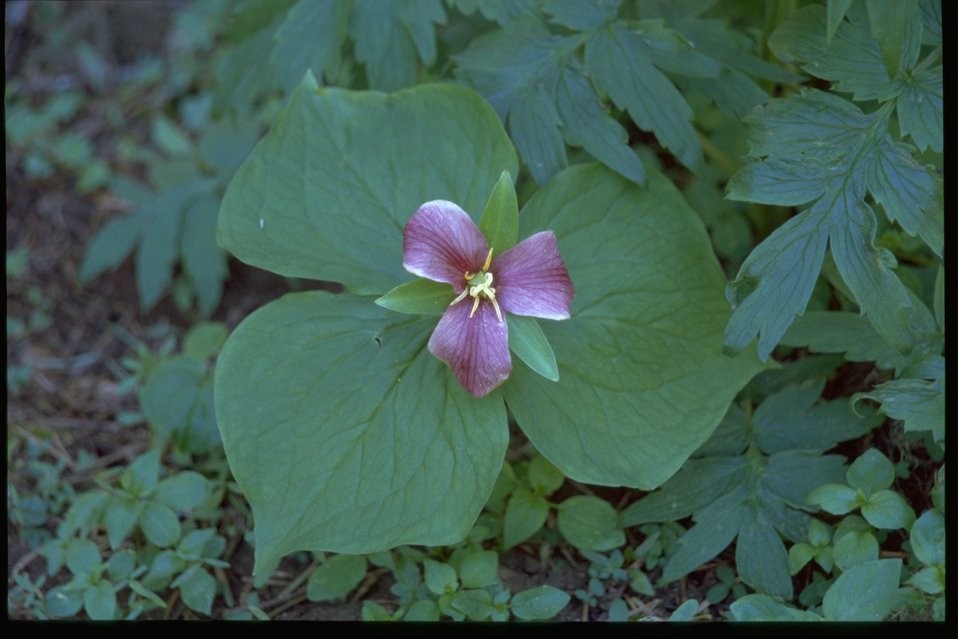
Trillium.